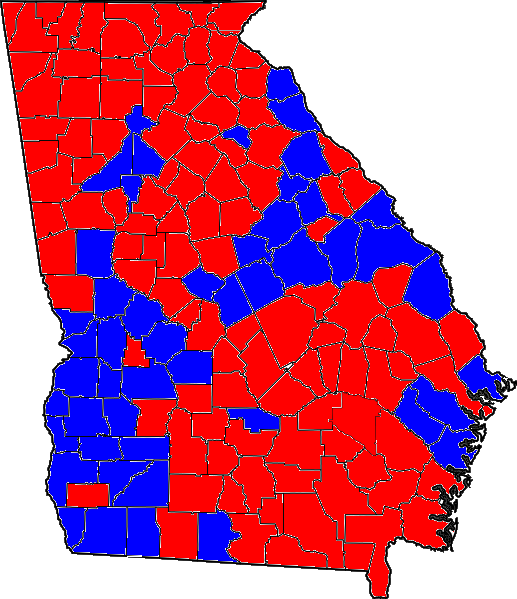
2002 GA Senate election results by county